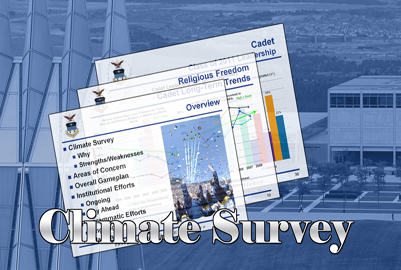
Academy climate survey

Air Force Academy officials shared detailed results of the 2009-2010 Cadet and Permanent Party Climate Assessment Survey with local media and the public Oct. 29, 2010.